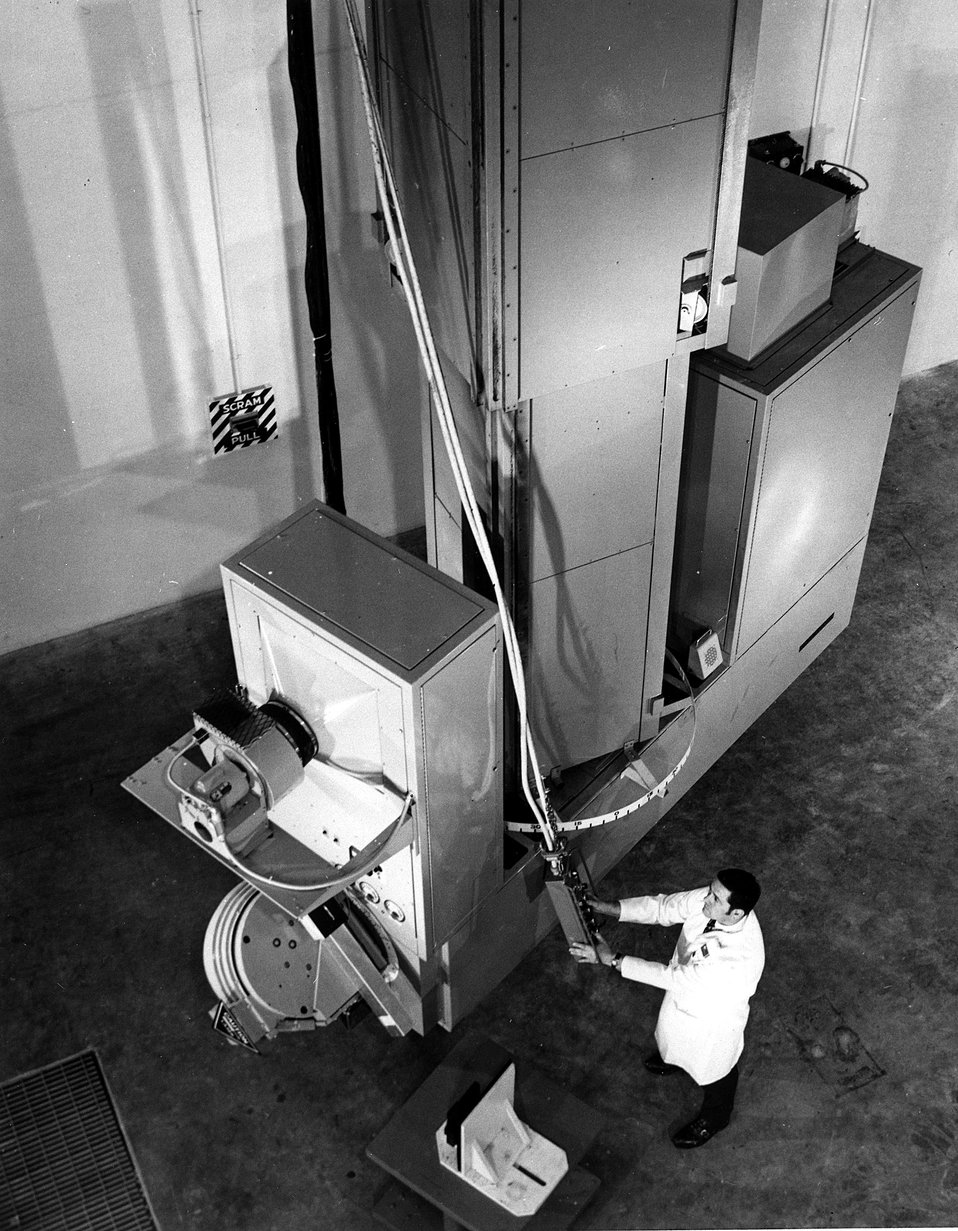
LINEAR ACCELERATOR...This twelve million volt (12 Mve) radiographic linear accelerator which has recently been installed at the Atomic Energy Commission's Y-12 Plant in Oak Ridge, Tennessee, is a powerful nondestructive test instrument. Circa 1972.